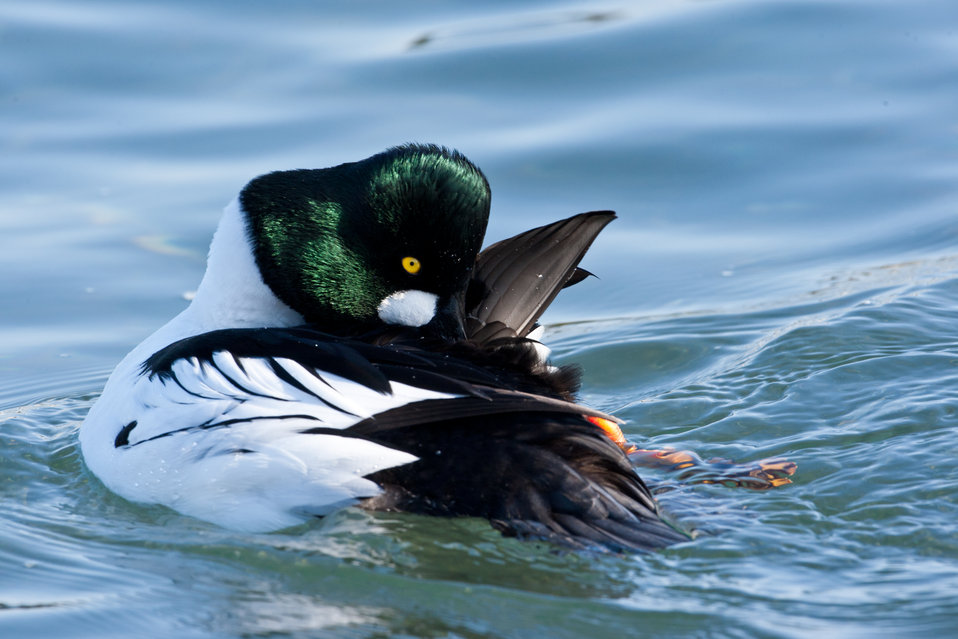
Common goldeneye preening (Bucephala clangula)

Adult male in breeding plumage. Common on lakes, rivers, and bays in small flocks that sometimes gather in larger numbers.